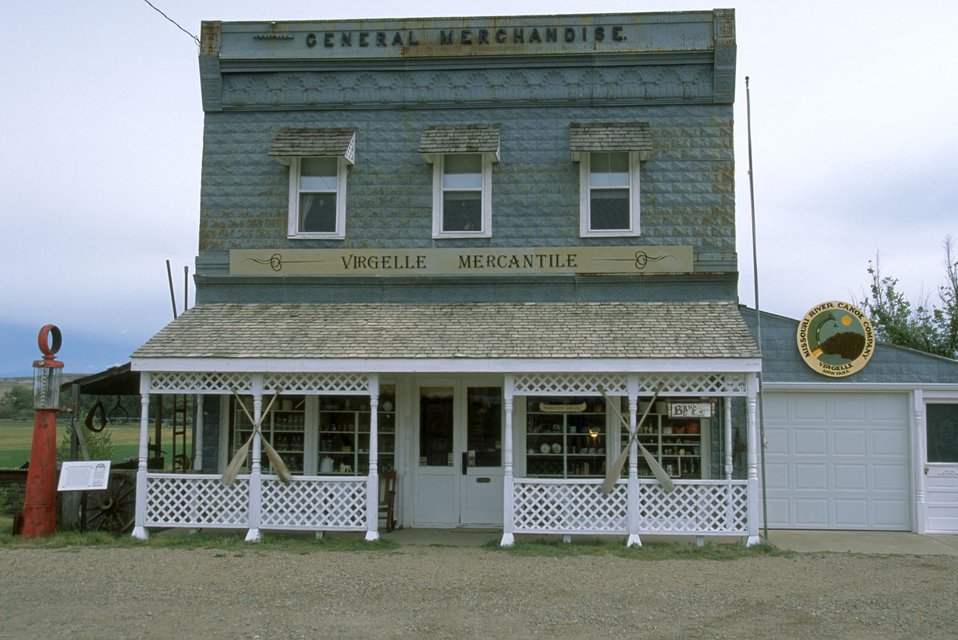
Virgelle Merchantile near Loma